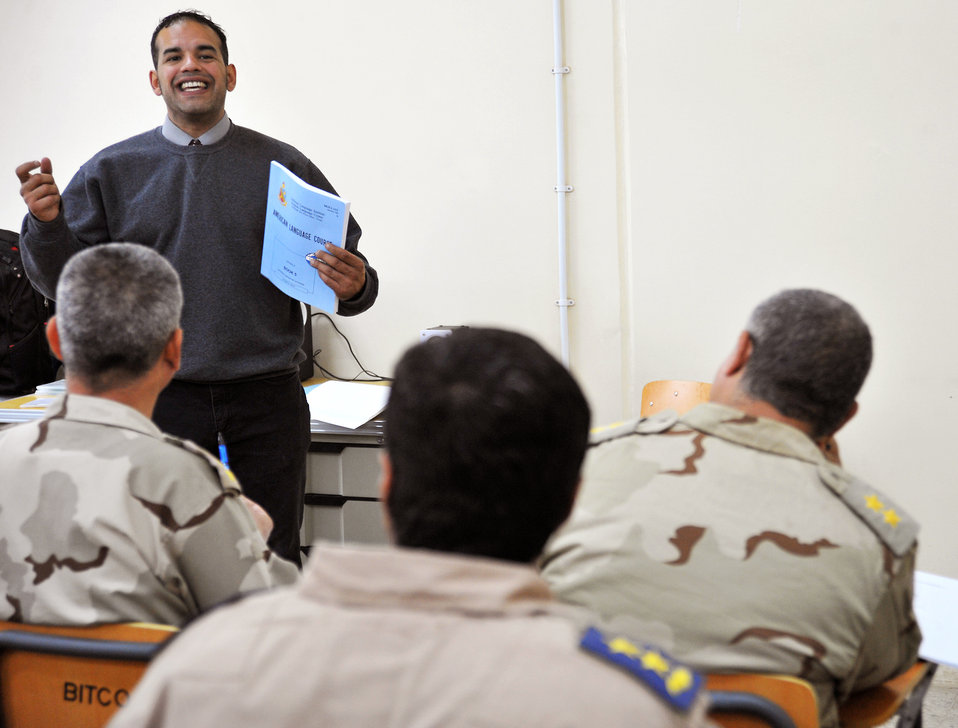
Iraqi Air Force Core Values

Joe Montalvo teaches a basic English language course to a class of Iraqi airmen Dec. 13, 2010, in Taji, Iraq. While air advisers work with the faculty to help them improve the way the overall program is run, it is the 19 U.S. contractors and lone Defense Language Institute civilian who work face-to-face with the students. Mr. Montalvo is an instructor at the Iraqi Air Force Training School.